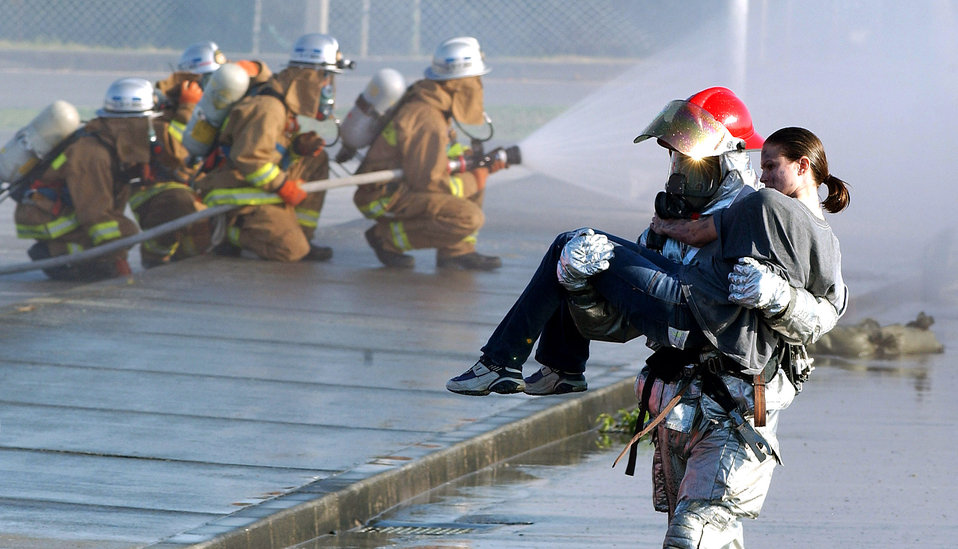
Bilateral exercise

An 18th Civil Engineer Squadron firefighter carries a simulated victim off site while Okinawan firefighters spray down a simulated aircraft accident at the first bilateral off-base exercise Feb. 28 between Kadena Air Base, Japan, emergency responders and local Okinawan police, fire and medical teams.